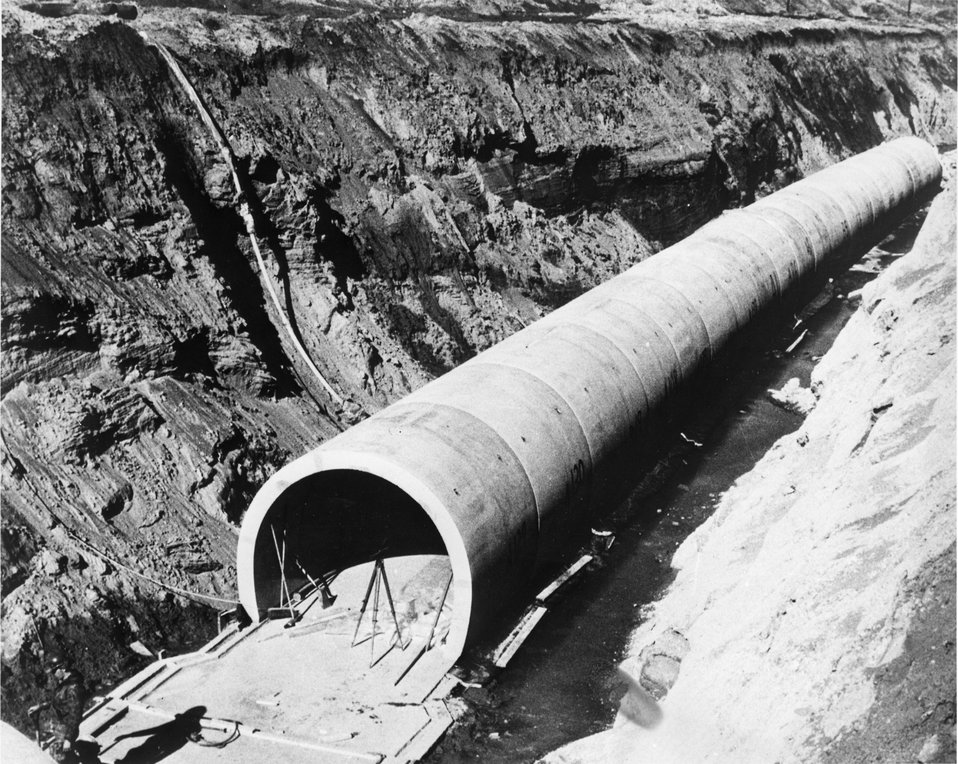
The Main Accelerator Ring is the largest single component in the Atomic Energy Commission's National Accelerator Laboratory at Batavia. c. 1970